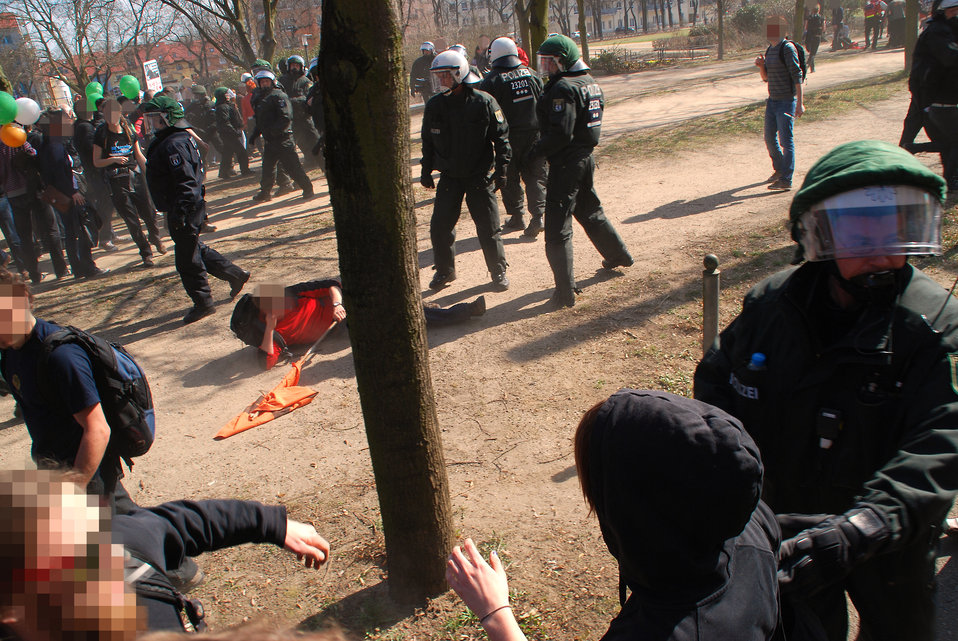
Proteste gegen den Nazi-Aufmarsch am 24.3.2012 in Frankfurt (Oder)